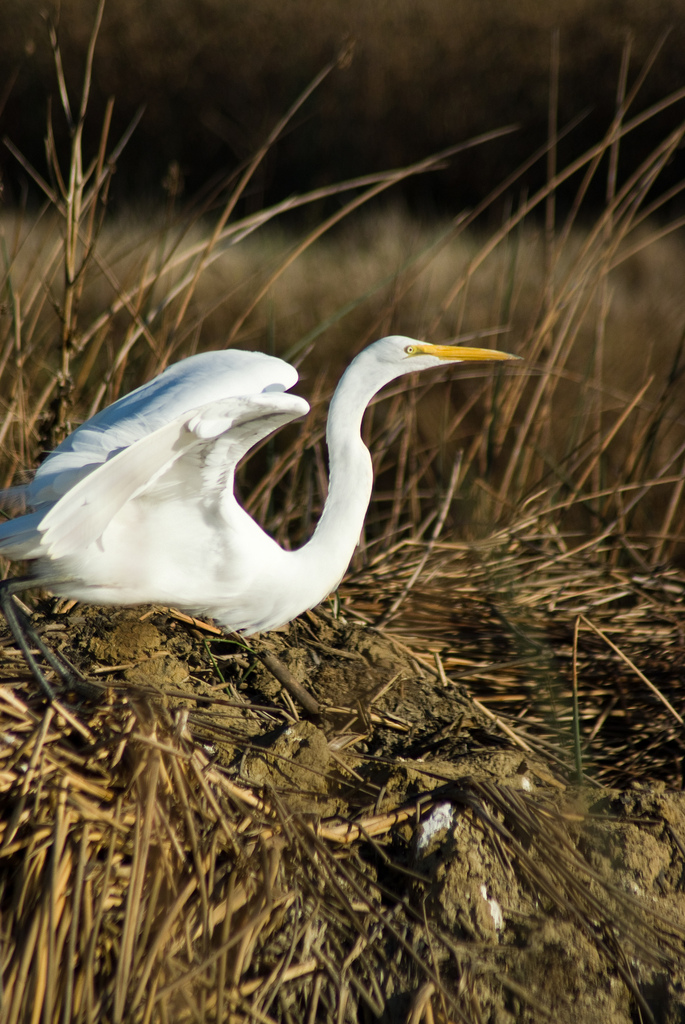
Great egret at Sacramento Refuge

A great egret shows off its snowy plumage at Sacramento National Wildlife Refuge, one of California’s premier waterfowl refuges. A birding tour on February 4, 2012 will give beginning birders and nature enthusiasts a close-up view of many wintering species. (Justine Belson)